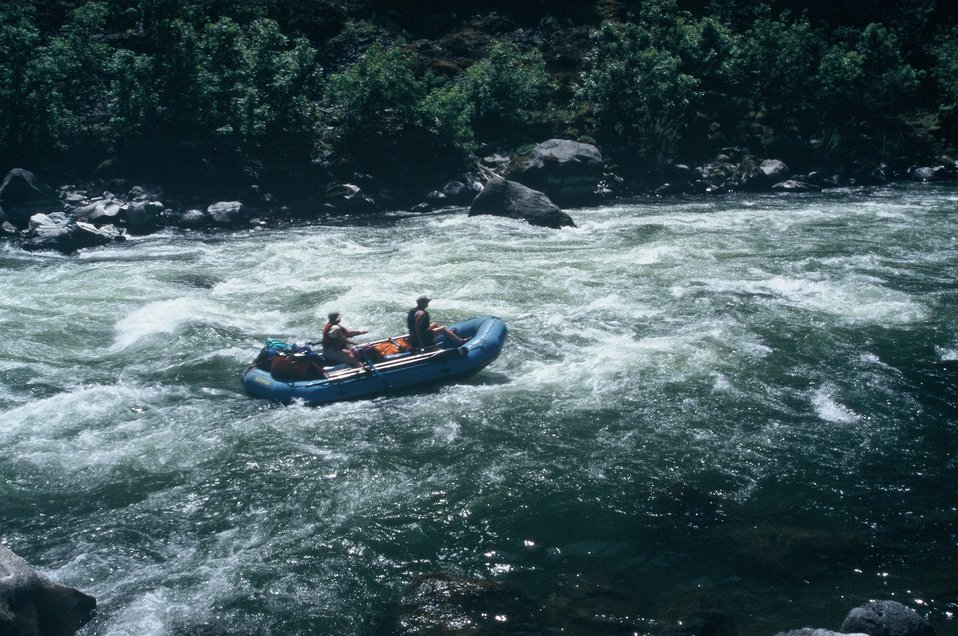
Wild section of the Rogue River from Grave Creek to Foster Bar May 19 to May 22.